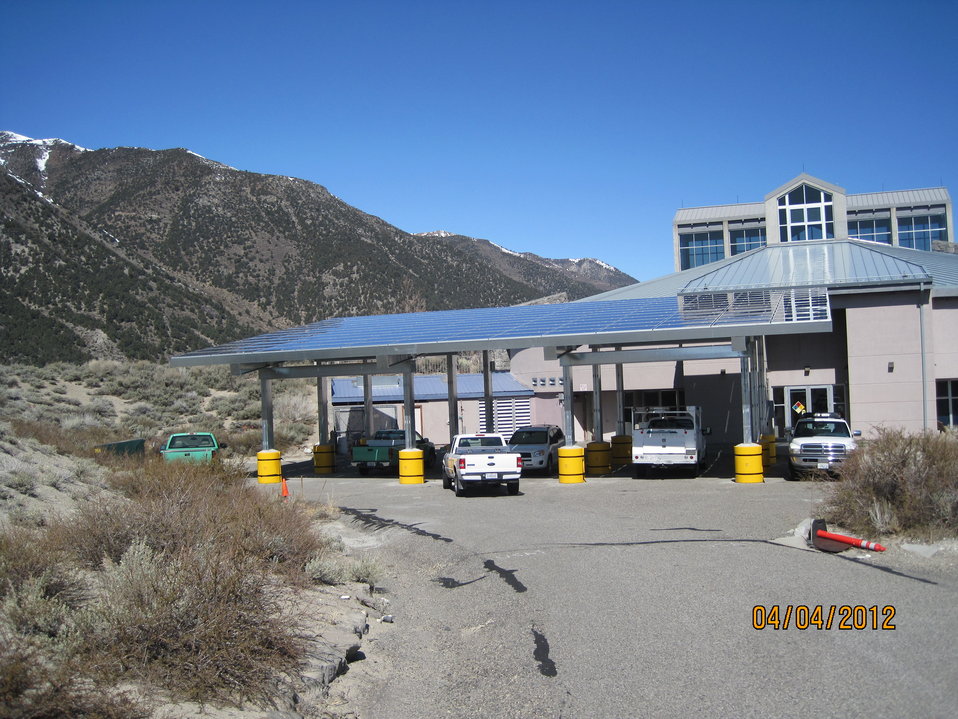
A new photovoltaic system for the Mono Basin Visitor Center on the Inyo National Forest will save taxpayers an estimated $20-25,000 in energy costs.